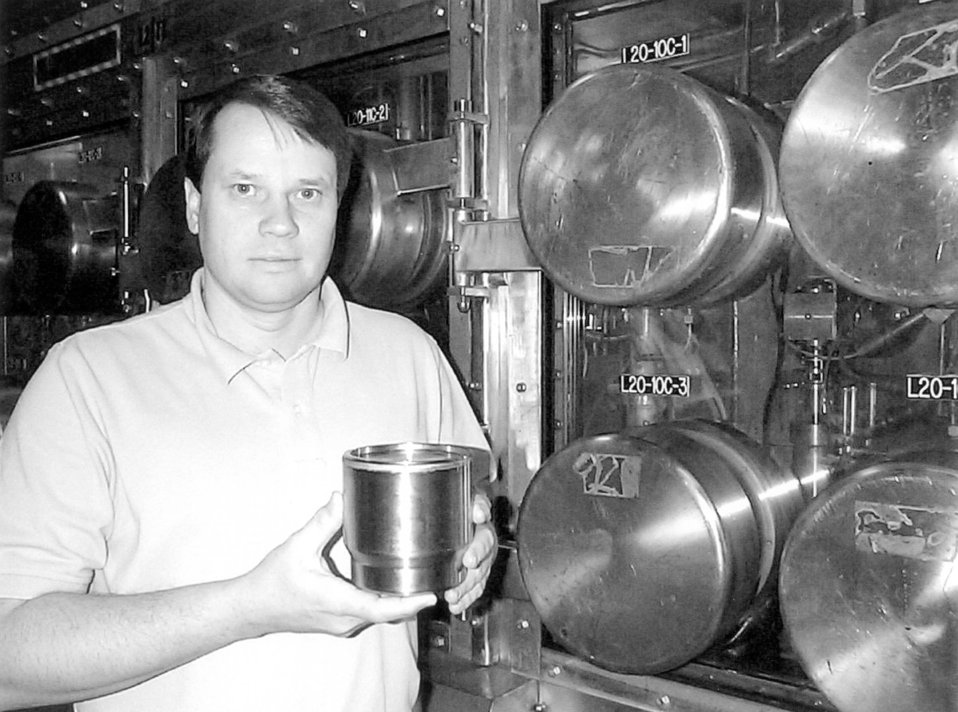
SRS TECHNICIAN HOLDING PLUTONIUM METALS REPACKAGED INTO BAGLESS TRANSFER CANS.

SRS HAS REPACKAGING ALL OF THE SITE'S BARTER-C METAL ITEMS INTO BAGLESS TRANSFER CANS. BARTER-C ITEMS ARE FUEL GRADE PLUTONIUM METAL INGOTS PREVIOUSLY PACKAGED FOR STORAGE USING CONVENTIONAL TECHNIQUES THAT INCLUDED THE USE OF PLASTIC AND LOW STRENGTH METAL CANS COMMMONLY CALLED 'FOOD PACK CANS'. THIS PACKAGING PROVED UNSUITABLE FOR LONG TERM STORAGE, THEREFORE REQUIRING THE REPACKAGING OF BARTER-C ITEMS FOR MORE ENVIRONMENTALLY SAFE, STABLE STORAGE.